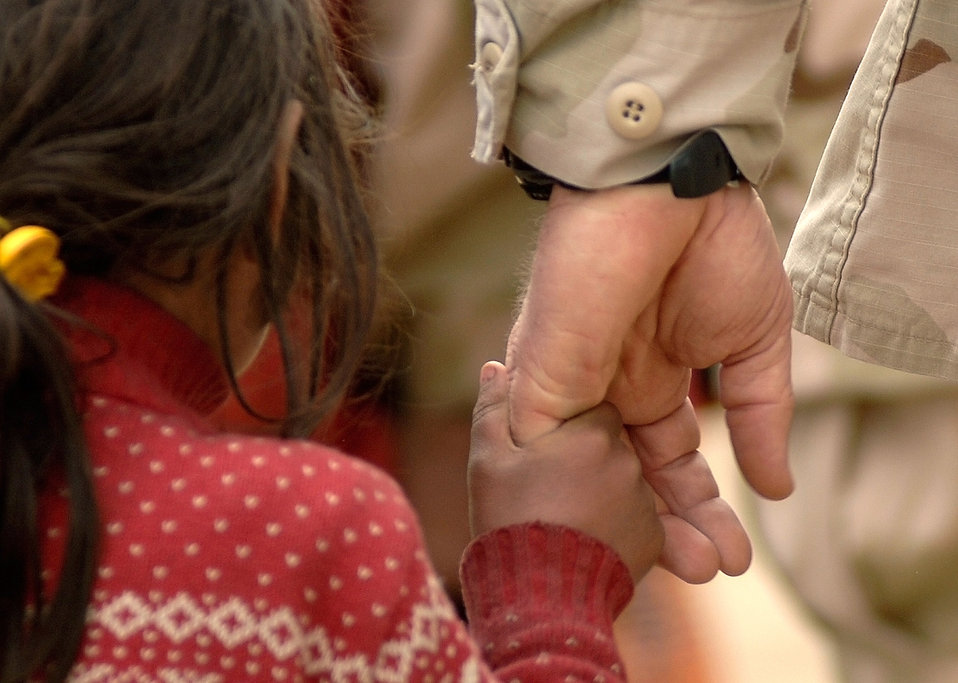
Joint forces volunteers donate time, goods

A local refugee child holds on to an Airman volunteer's hand during a visit March 16 to Dar Ul Aman in support of the volunteer community reach program. Some 200 bags of supplies were successfully distributed. The program volunteers provide this service every month thanks to donated items from U.S. citizens.